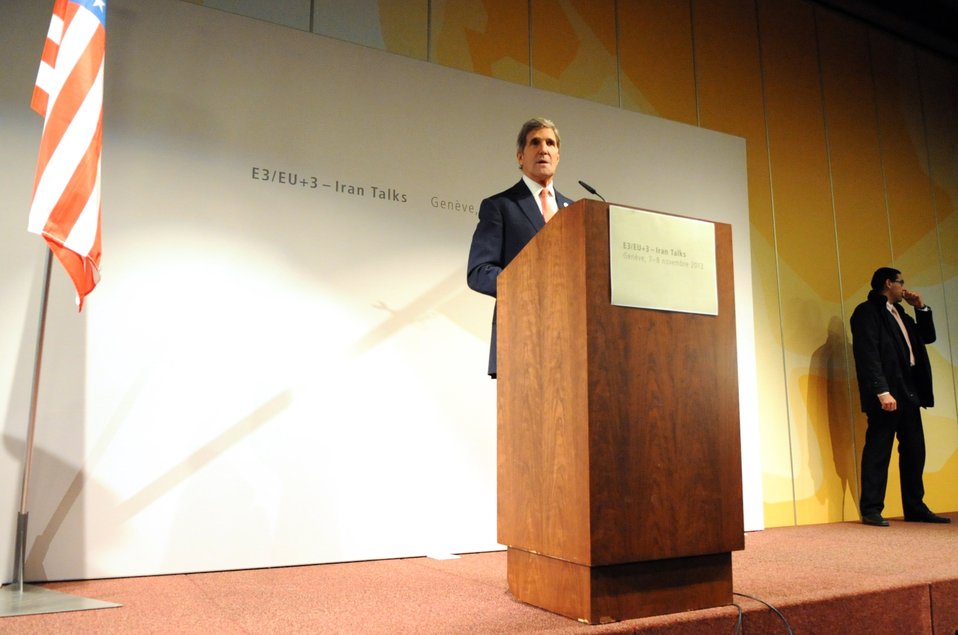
Secretary Kerry Addresses Reporters After P5 1 Talks

U.S. Secretary of State John Kerry addresses an international press corps after he and fellow representatives of the P5 1 concluded talks in Geneva, Switzerland, on November 10, 2013, that focused on Iran's nuclear capabilities.